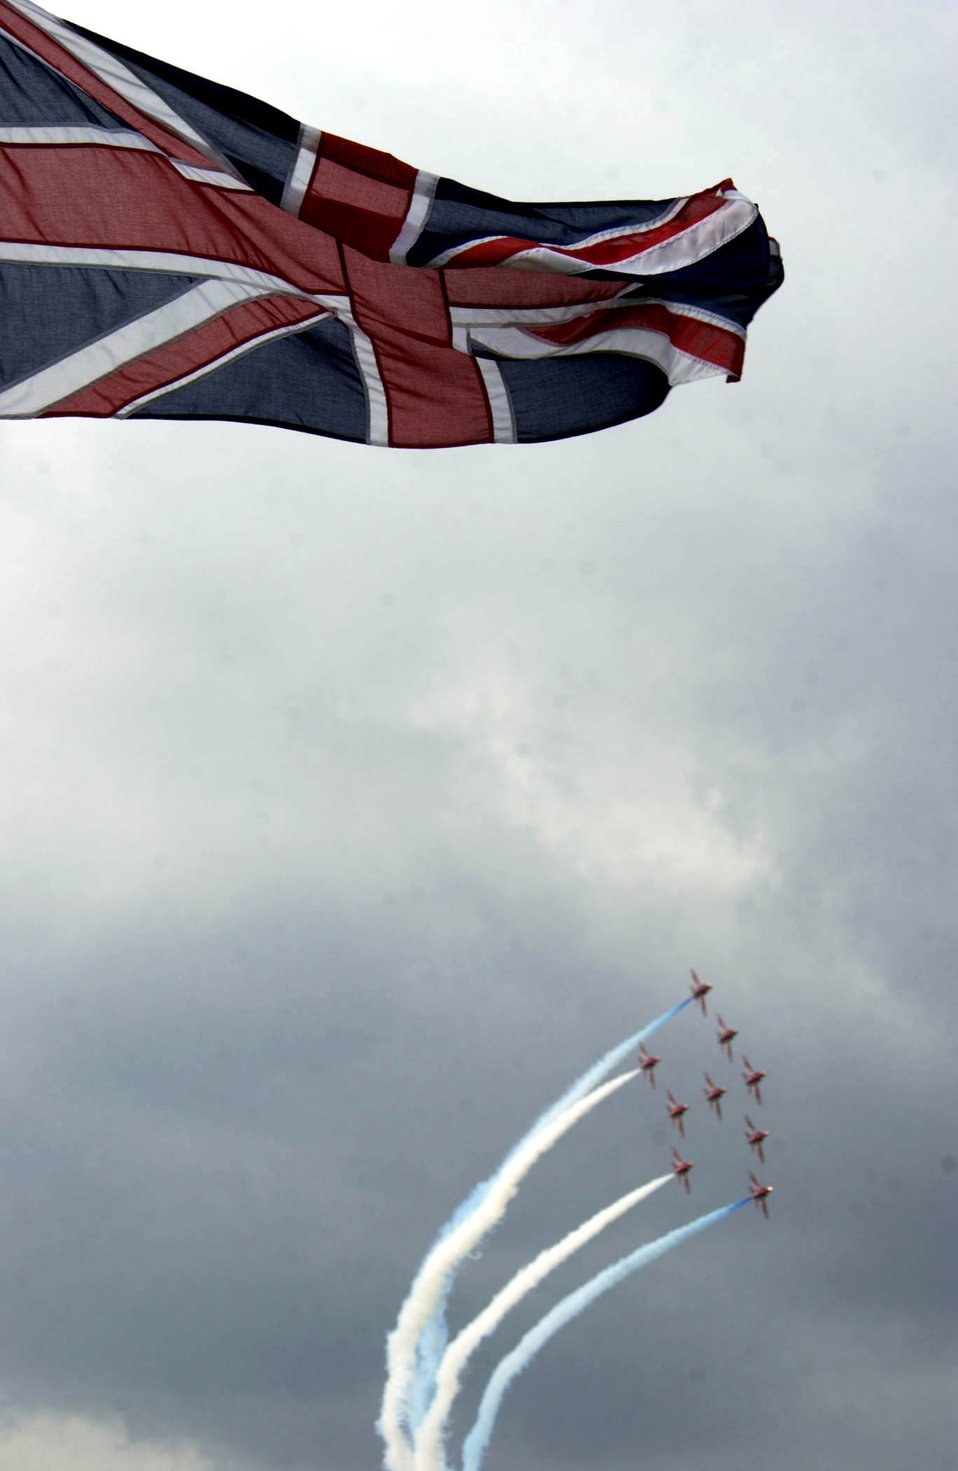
A revealing tattoo

ROYAL AIR FORCE FAIRFORD, England -- The British Red Arrows aerial demonstration team performs for during the Royal International Air Tattoo here July 16 to 18. More than 100,000 people visited the air show daily to see 350 aircraft from 15 nations and 30 different service branches.